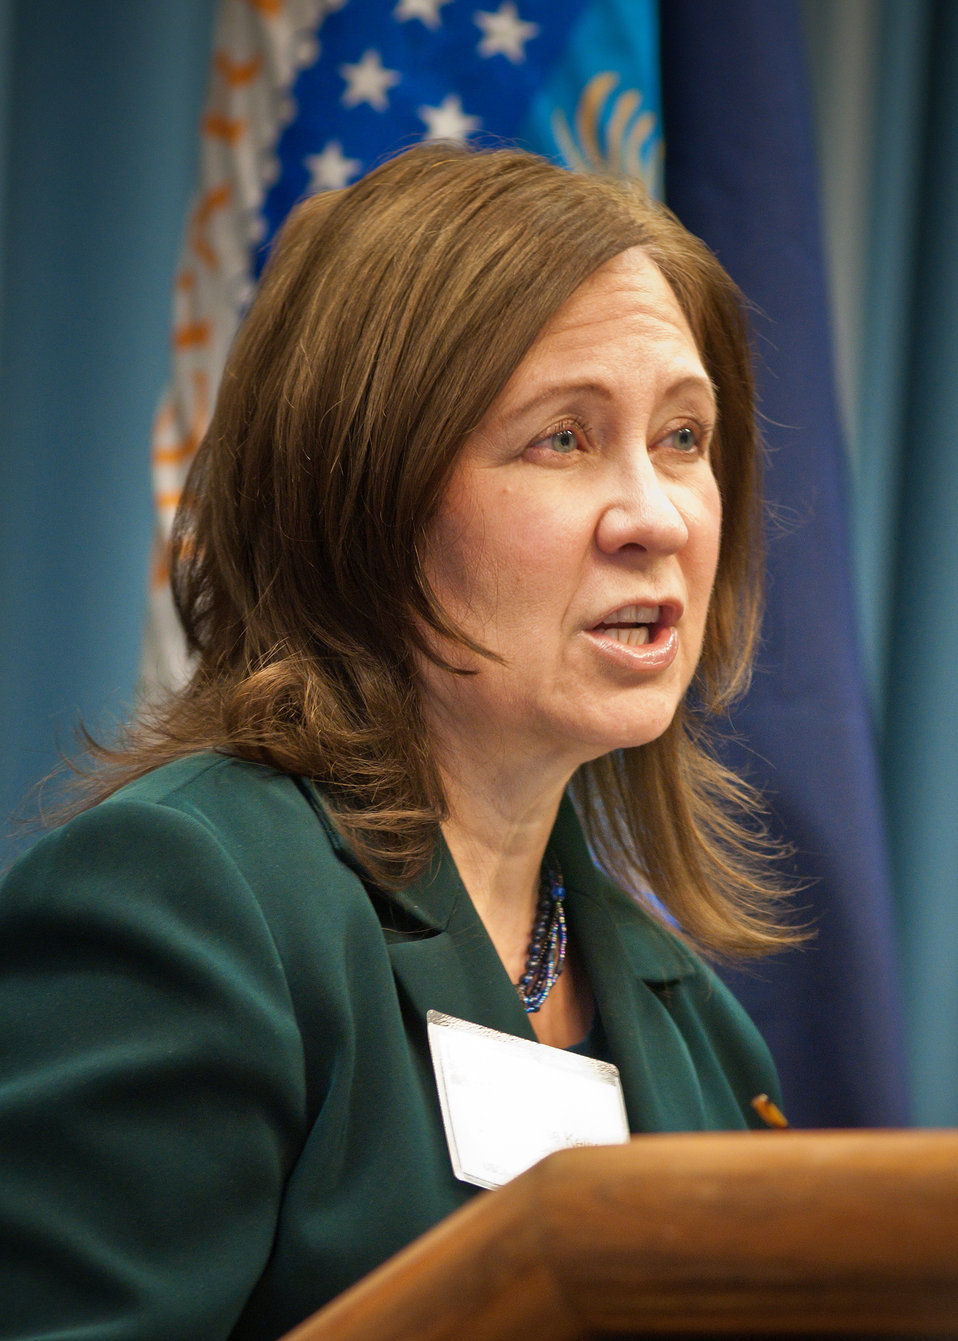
Dr. Karlease Kelly, Provost, Office of Human Resources Management, United States Department of Agriculture, Virtual University explains the Virtual University at the United States Department of Agriculture Hispanic Roundtable at the United States Department of Agriculture, Monday, December 5, 2011 in Washington, DC. The roundtable focused on recruitment, retention and employee development for the purpose of developing the USDA Hispanic recruitment Plan. The roundtable hosted several national Hispanic partners and recognized USDA Hispanic organizations and associations.